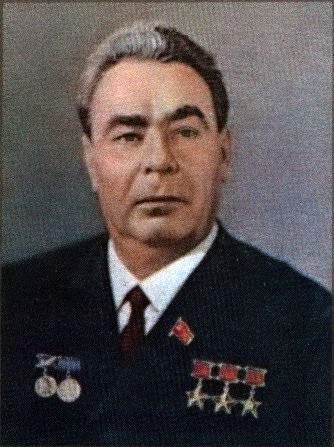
Leonid Brezhnev, portrait on stamp.